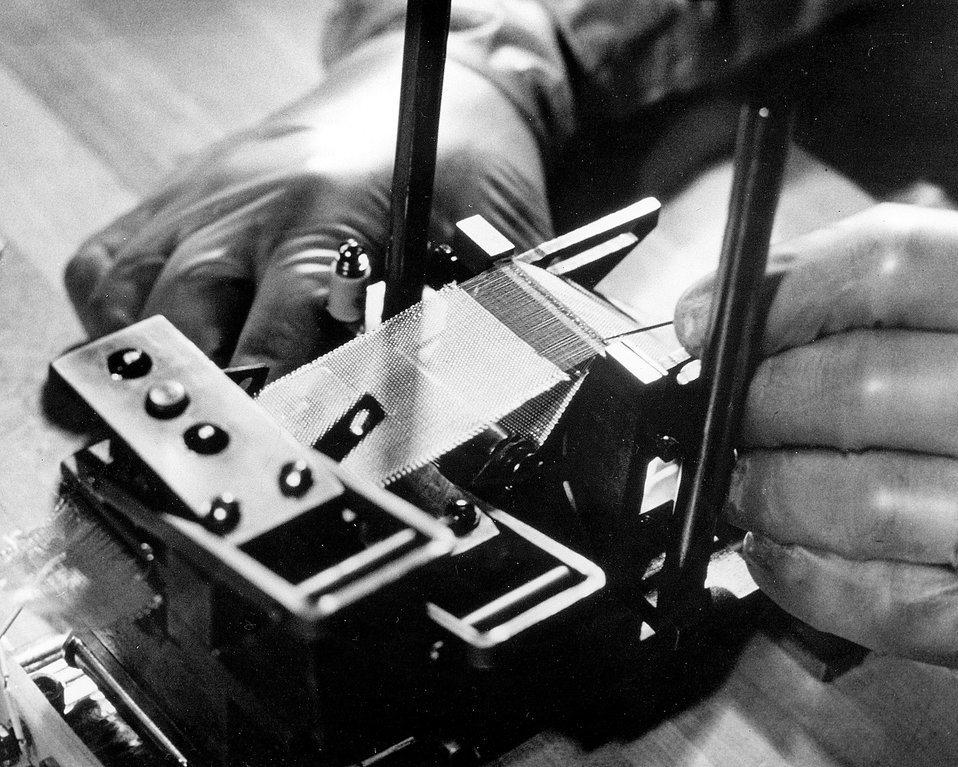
Assembly of ribbon of thermo couples to be wound around a central core containing the plutonium-238 heat source. Circa 1971.